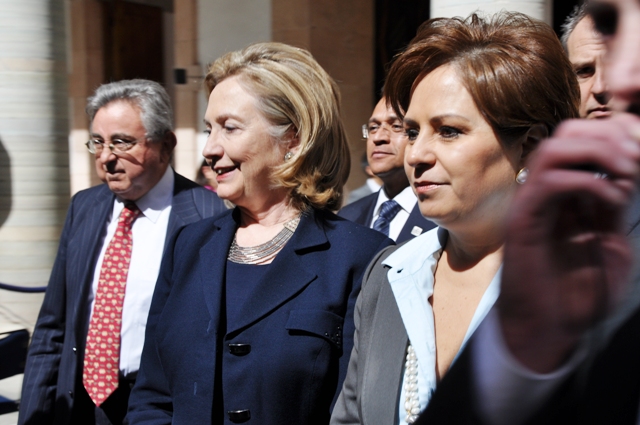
Secretary Clinton and Mexican Foreign Secretary Espinosa Tour the Historic Alhondiga de Granaditas

U.S. Secretary of State Hillary Rodham Clinton and Mexican Foreign Secretary Patricia Espinosa tour the historic Alhondiga de Granaditas in Guanajuato, Mexico, on January 24, 2011.